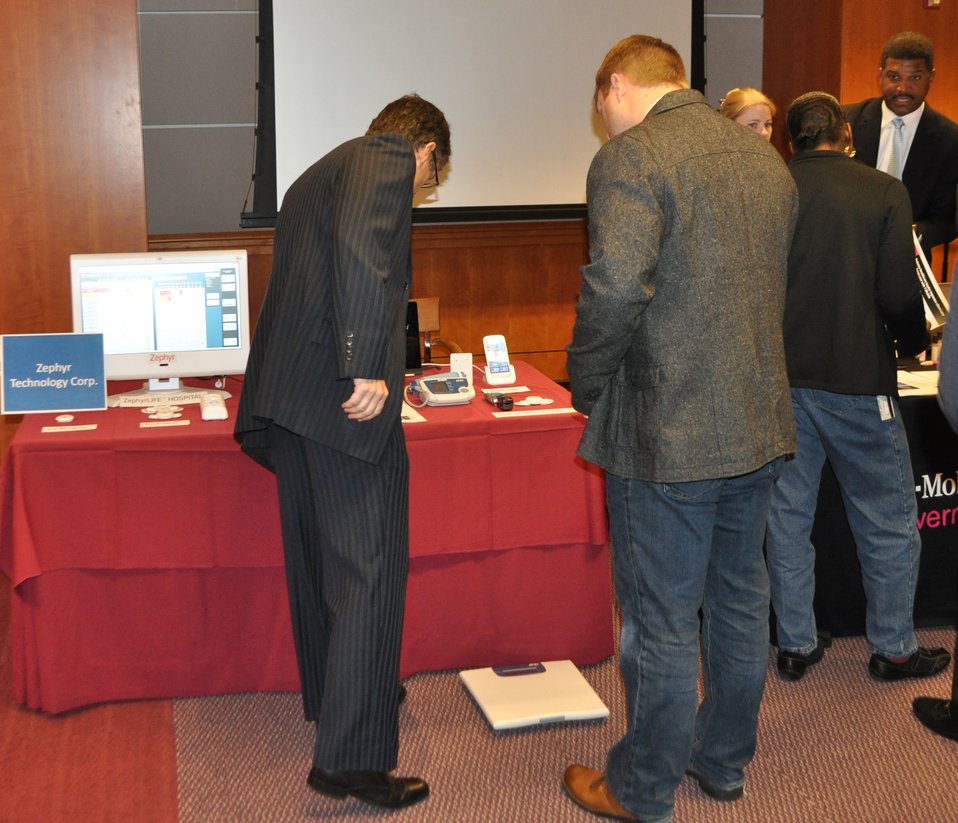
12.6.13 mHealth Innovation Expo

FCC mHealth Innovation Expo.